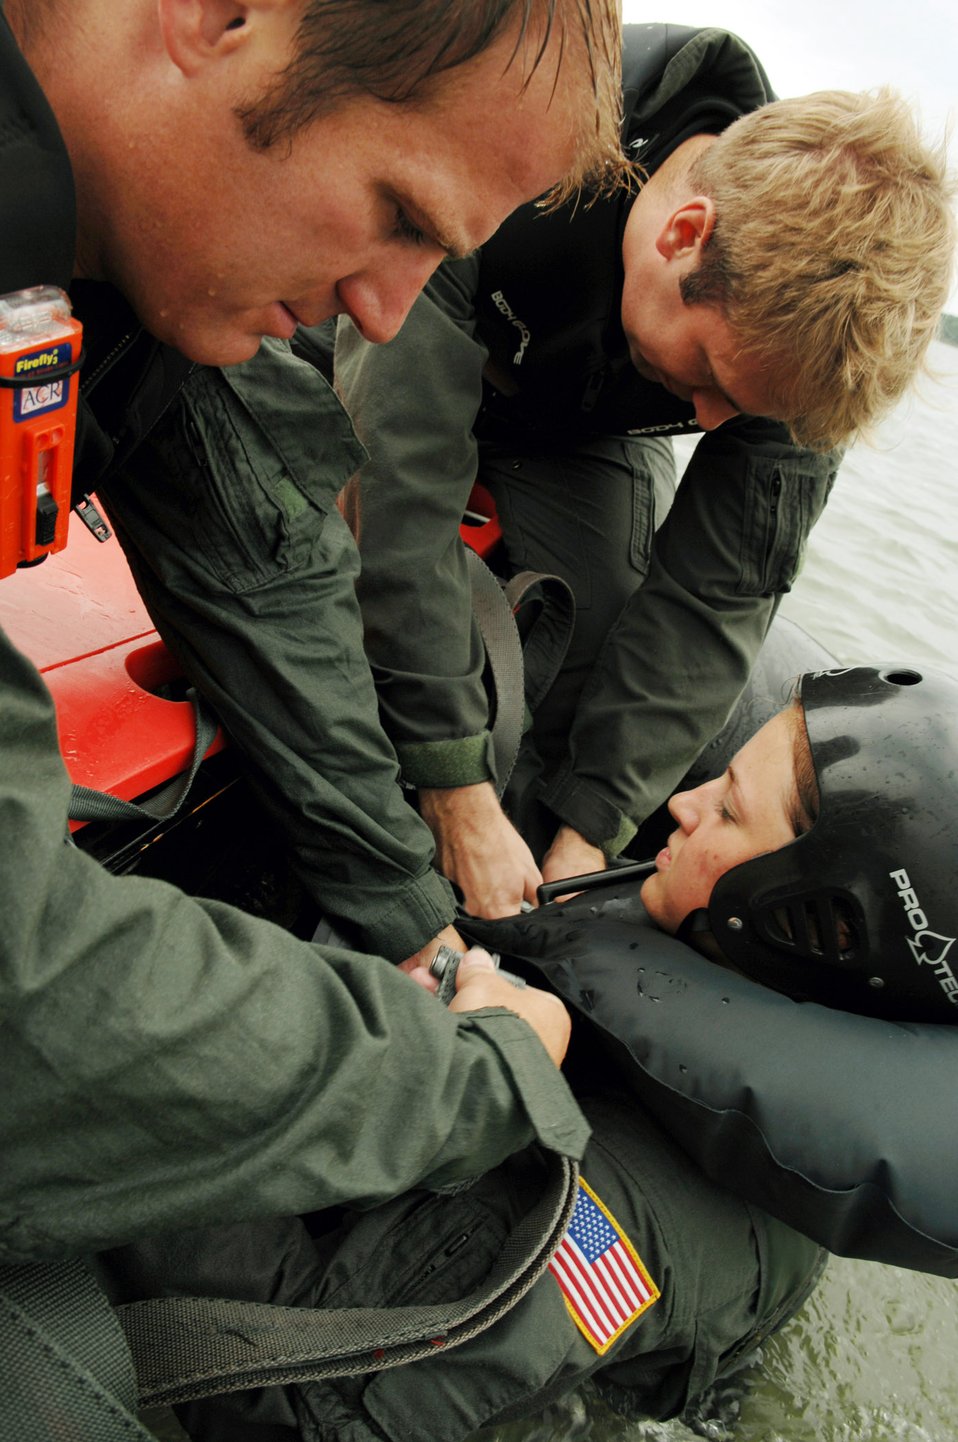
Water survival

Tech. Sgt. James Goyet along with Maj. David Johnson buckle Cadet Jennifer Ebert into parachute straps in a parachute disentanglement exercise for Survival, Evasion, Resistance and Escape Water Survival Training June 20. Sergeant Goyet is a 1st Operations Support Squadron SERE specialist, and Major Johnson is the 1st Operations Support Squadron, OST flight commander. Cadet Ebert is a U.S. Air Force Academy cadet. This training simulates a pilot landing in the ocean attached to his parachute and how to survive the landing. Currently this training is being held on a monthly basis, in which Academy cadets rotate in on three-week intervals to take part in the survival training.